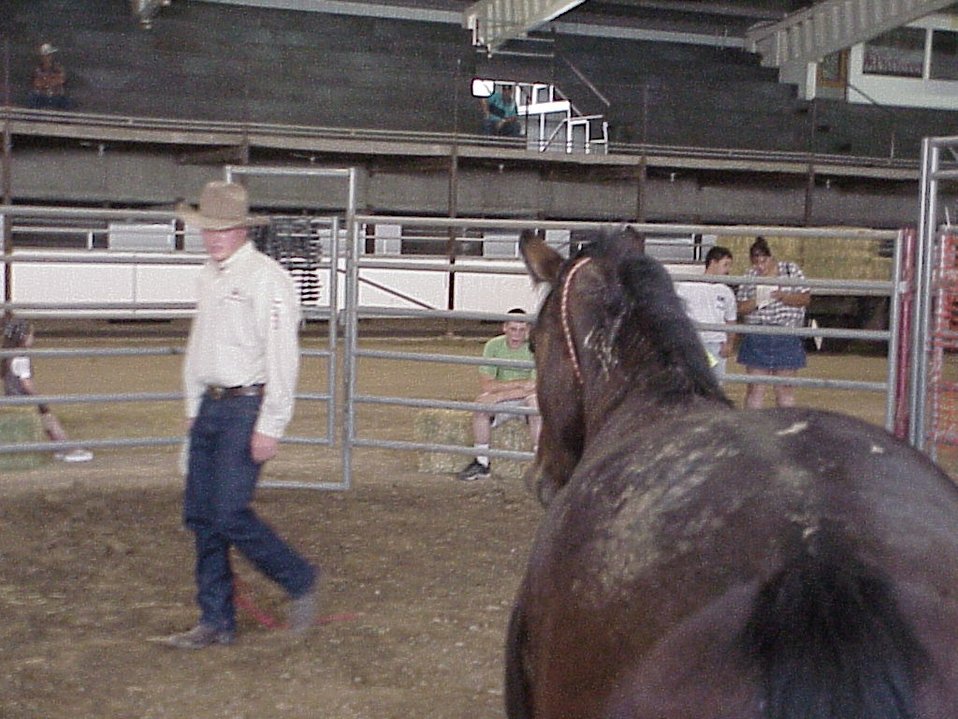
Horse Gentler Mario Johnson Lewiston Wild Horse and Burro Adoption Program Auction WHB indoor auction Cottonwood Field Office UCSC Upper Columbia Salmon Clearwater District